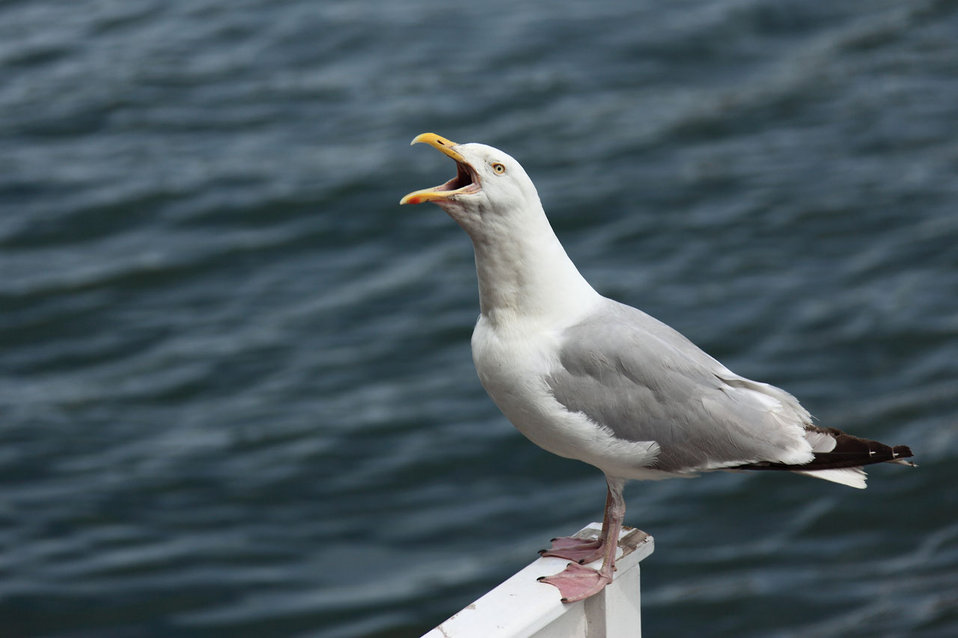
Screaming seagull

Squawking seagull with sea in the background.